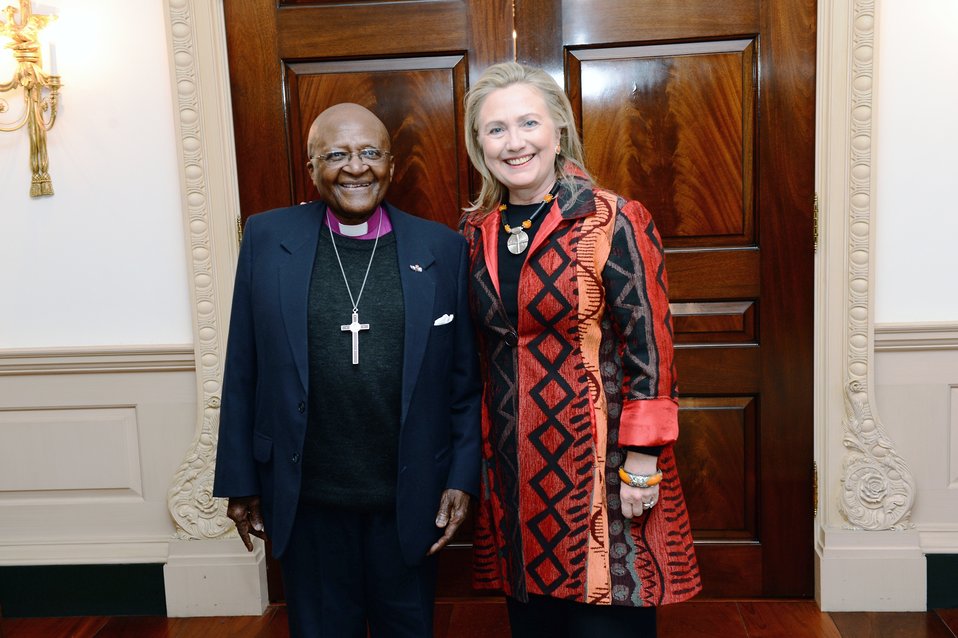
Secretary Clinton Meets With Archbishop Tutu

U.S. Secretary of State Hillary Rodham Clinton meets with Archbishop Desmond Tutu at the U.S. Department of State in Washington, D.C., October 10, 2012.